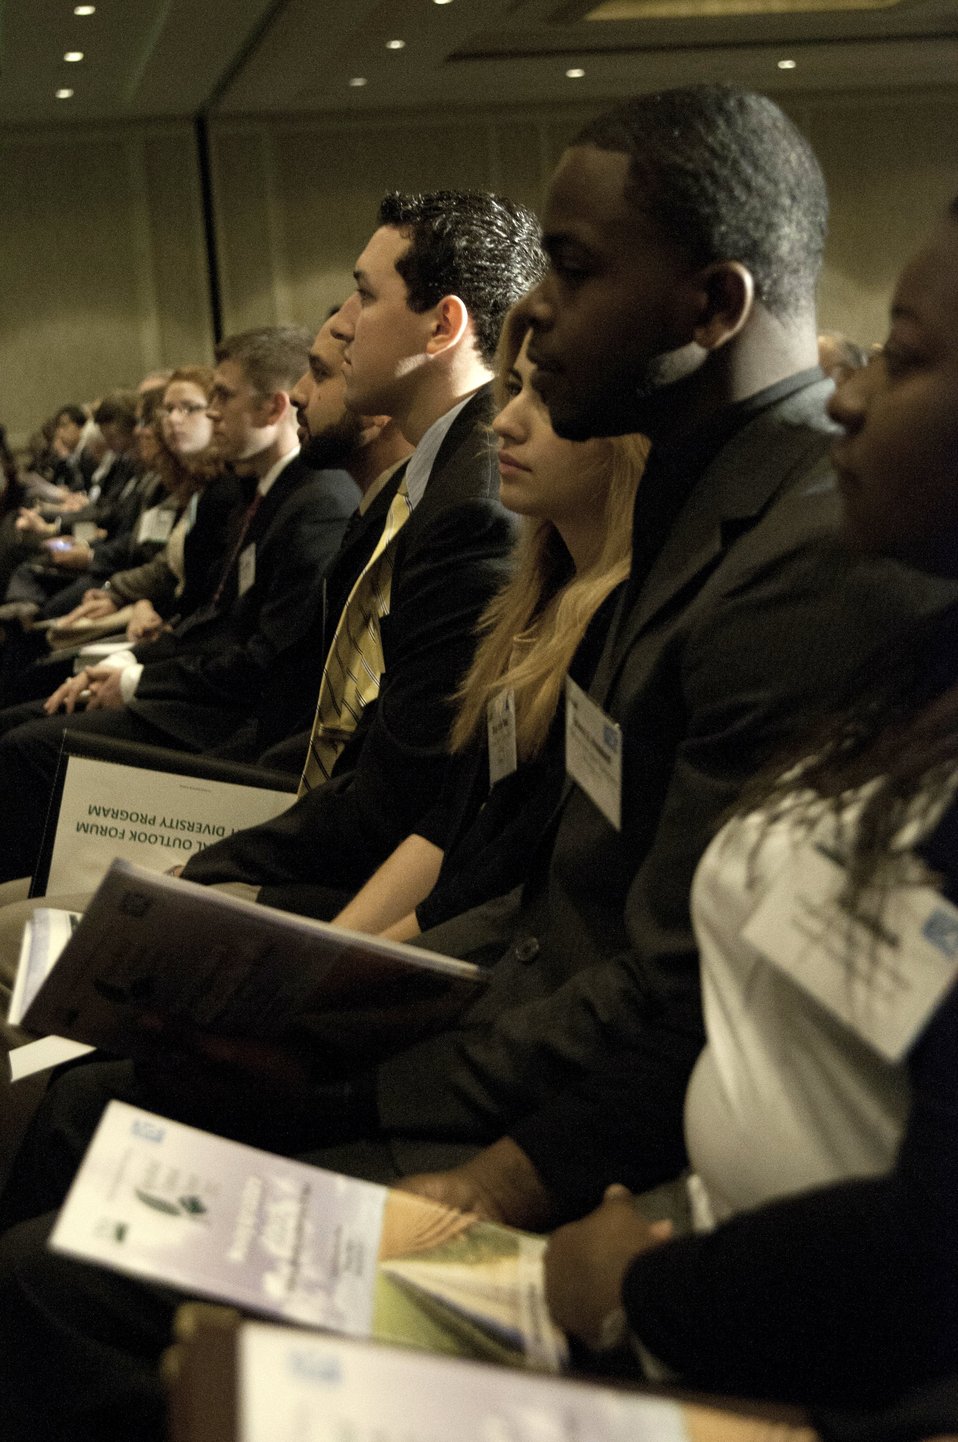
Attendees at the 2012 Agricultural Outlook Forum listen as Agriculture Secretary Tom Vilsack makes remarks at the 2012 Agricultural Outlook Forum, “Moving Agriculture Forward” in Arlington, VA. On Thursday, February 23, 2012.